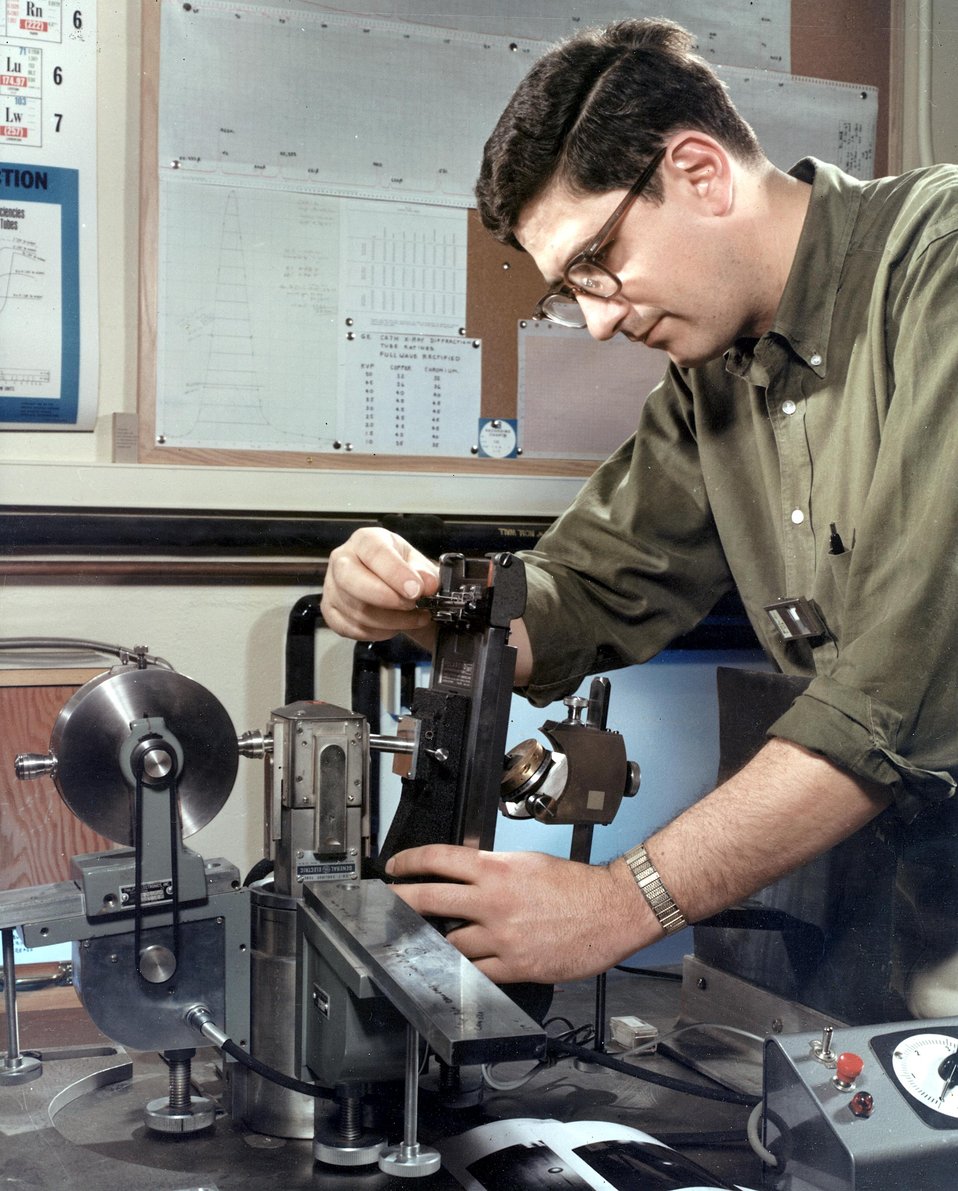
X-ray diffraction techniques applied to a study of the orientation and perfection of a single crystal.